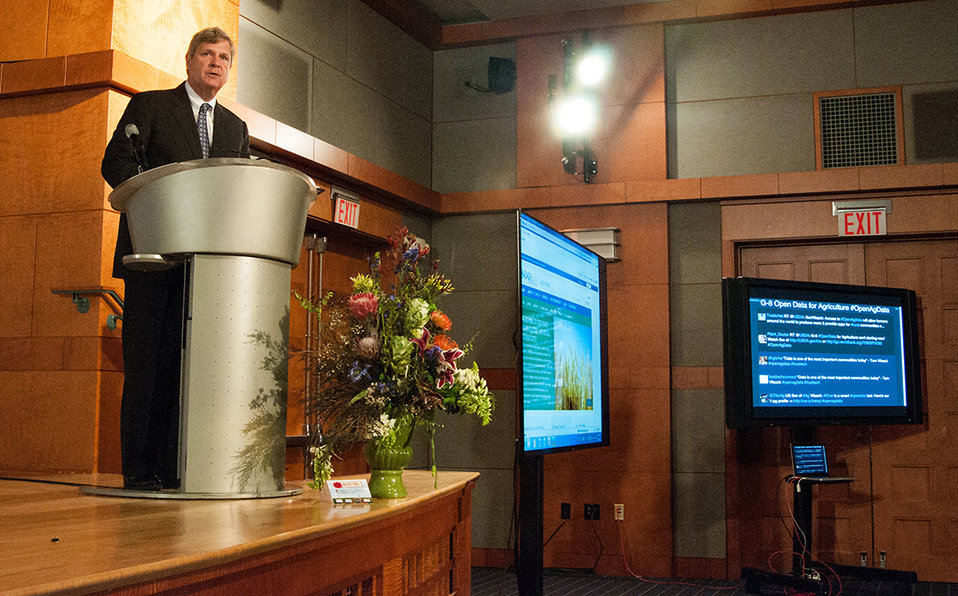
Agriculture Secretary Tom Vilsack addresses the G-8 International Conference on Open Data for Agriculture in Washington, D.C. on Monday Apr. 29, 2013. Secretary Vilsack kicked off a two-day international open data conference, saying that data “is one of the most important commodities in agriculture” and sharing it openly increases its value.